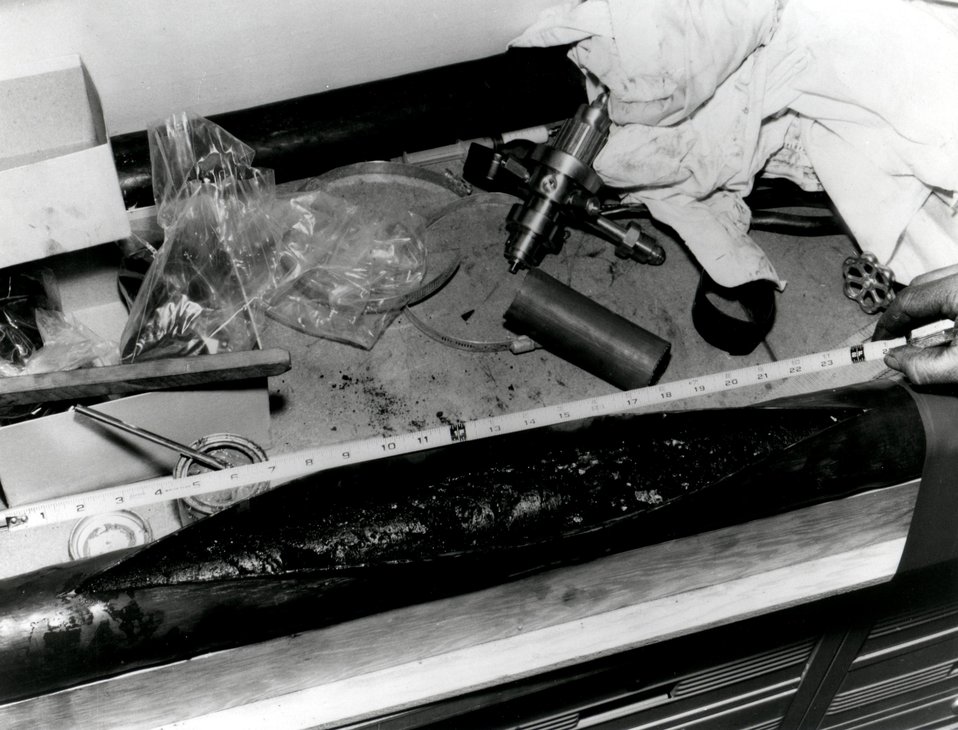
This core was retrieved from a hole in a coal deposit as part of a preliminary experiment in a project to explore a new technology for the gasification of coal in place underground. Circa 1975.